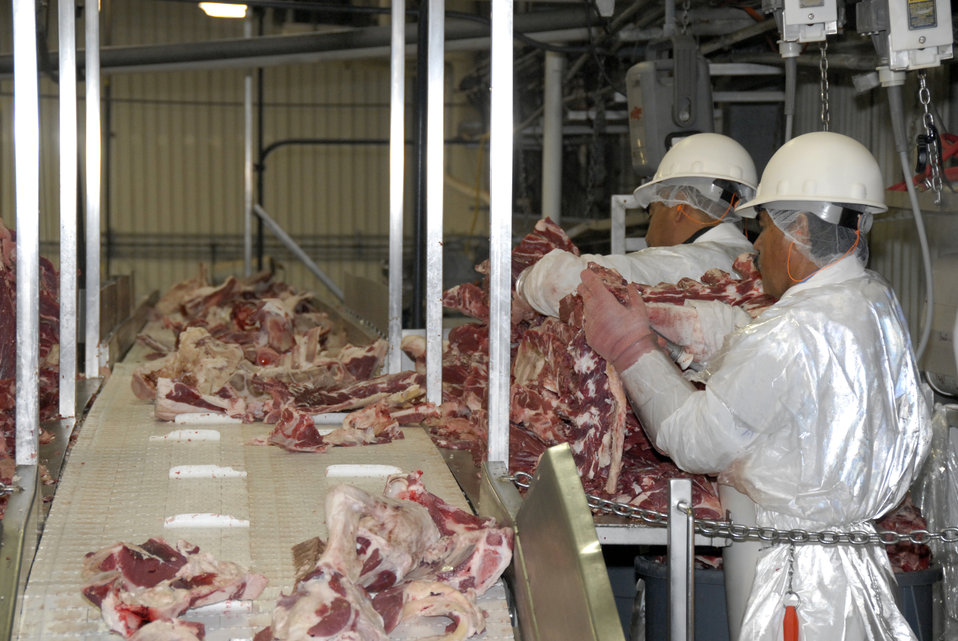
Workers at the Sam Kane beef slaughterhouse in Corpus Christi, Texas on June 10, 2008 dissect, sort and separate beef parts. U.S. Department of Agriculture (USDA) Food Safety and Inspection Service (FSIS) inspectors are on site to ensure the beef is processed in accordance with USDA FSIS regulations.